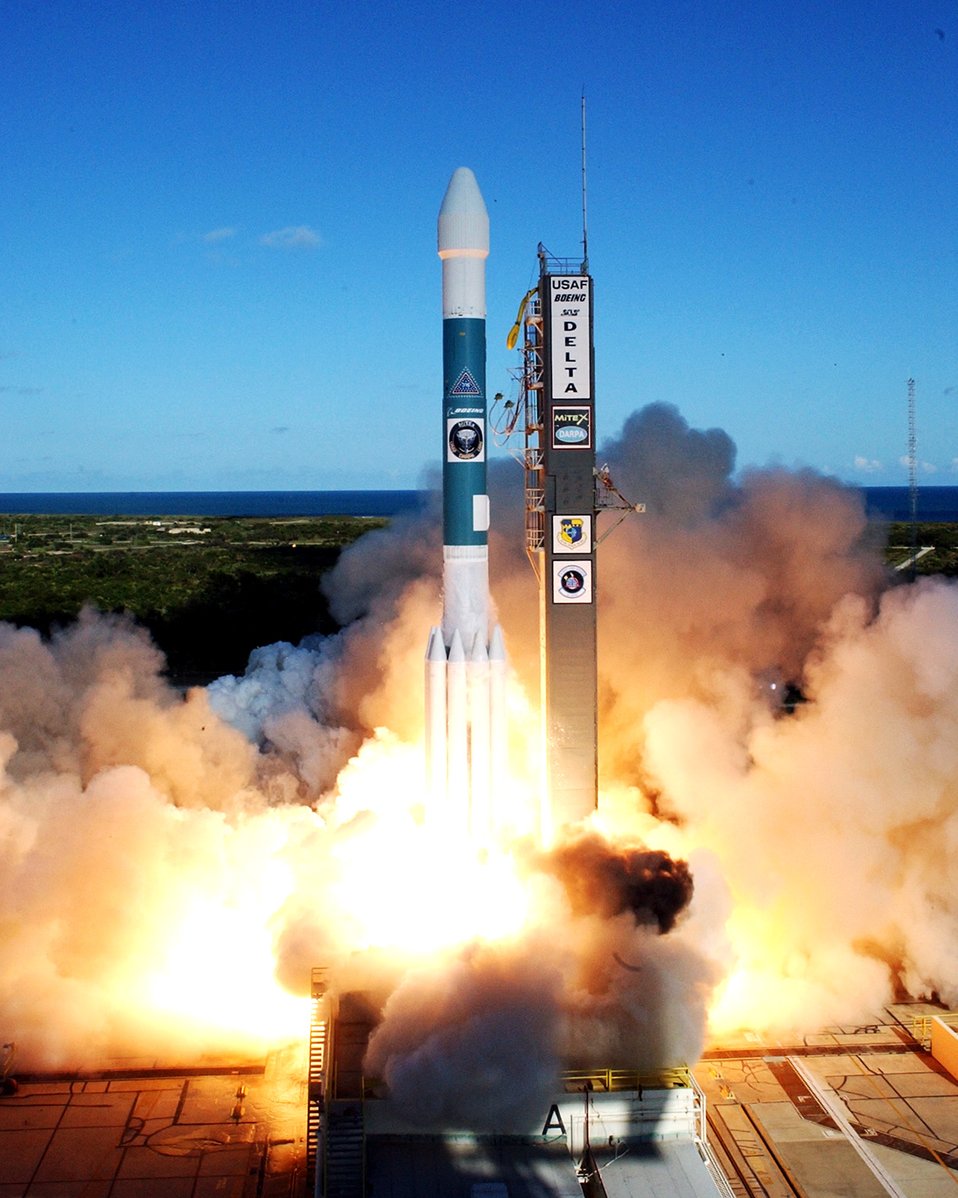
Delta II

A joint government/industry team launched this Delta II rocket at Cape Canaveral Air Force Station, Fla., Wednesday, June 21. The payload was a Micro-satellite Technology Experiment designed to support and enhance future U.S. space operations.